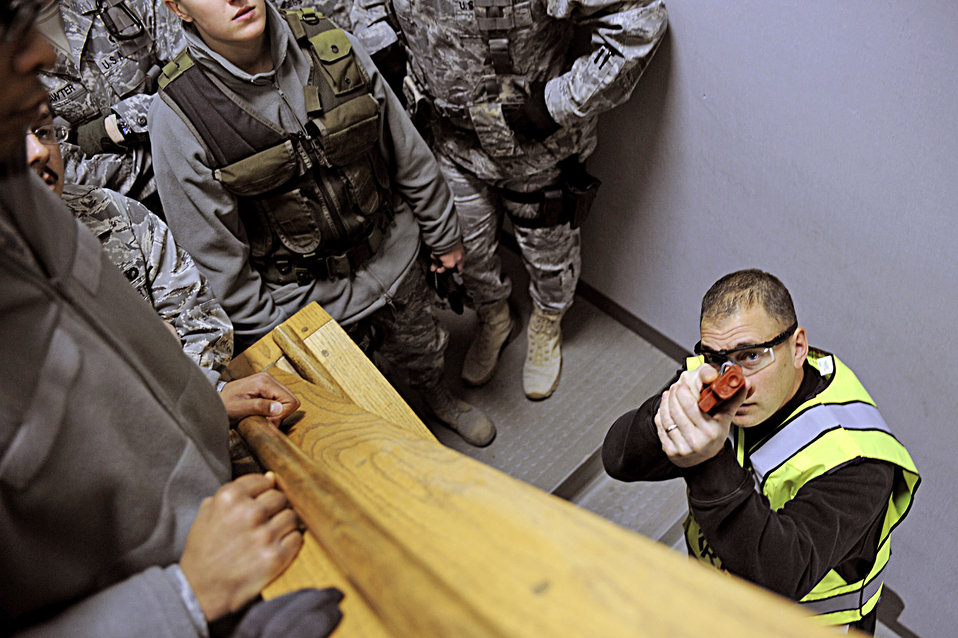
Ellsworth Airmen participate in training with local sheriff's department

Sgt. Mike Ghents demonstrates the proper way to clear a stairwell to members of the 28th Security Forces Squadron Jan. 25, 2010, at Ellsworth Air Force Base, S.D. The Pennington County Sheriff's Department special response team gave 28th SFS team members precise training on various armed threat scenarios. Sergeant Ghents is the Pennington County Sheriff's Department school liason officer.